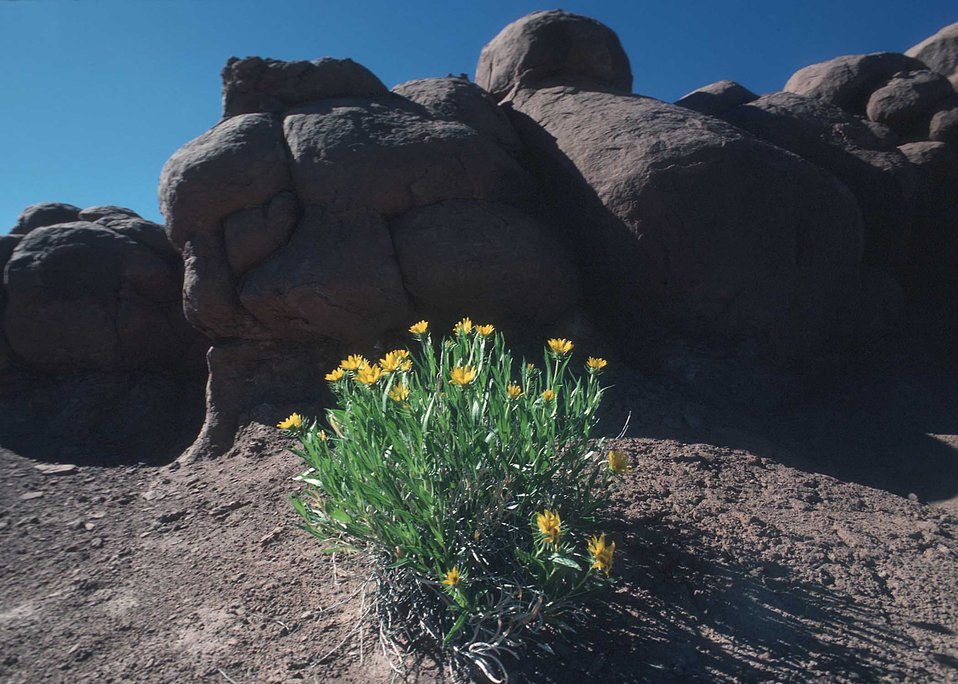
Desert flowers bloom briefly during the late spring in Southern Utah.